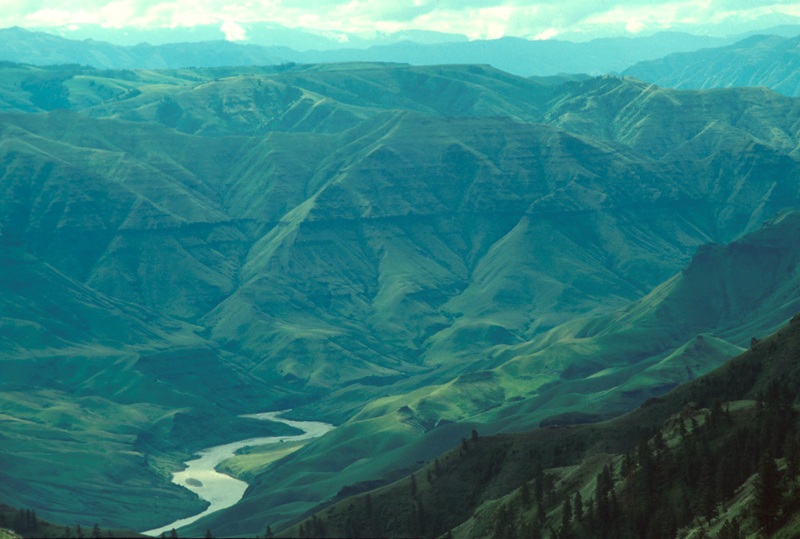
Scenic Lower Salmon River Cottonwood Resource Area Upper Columbia-Salmon Clearwater District